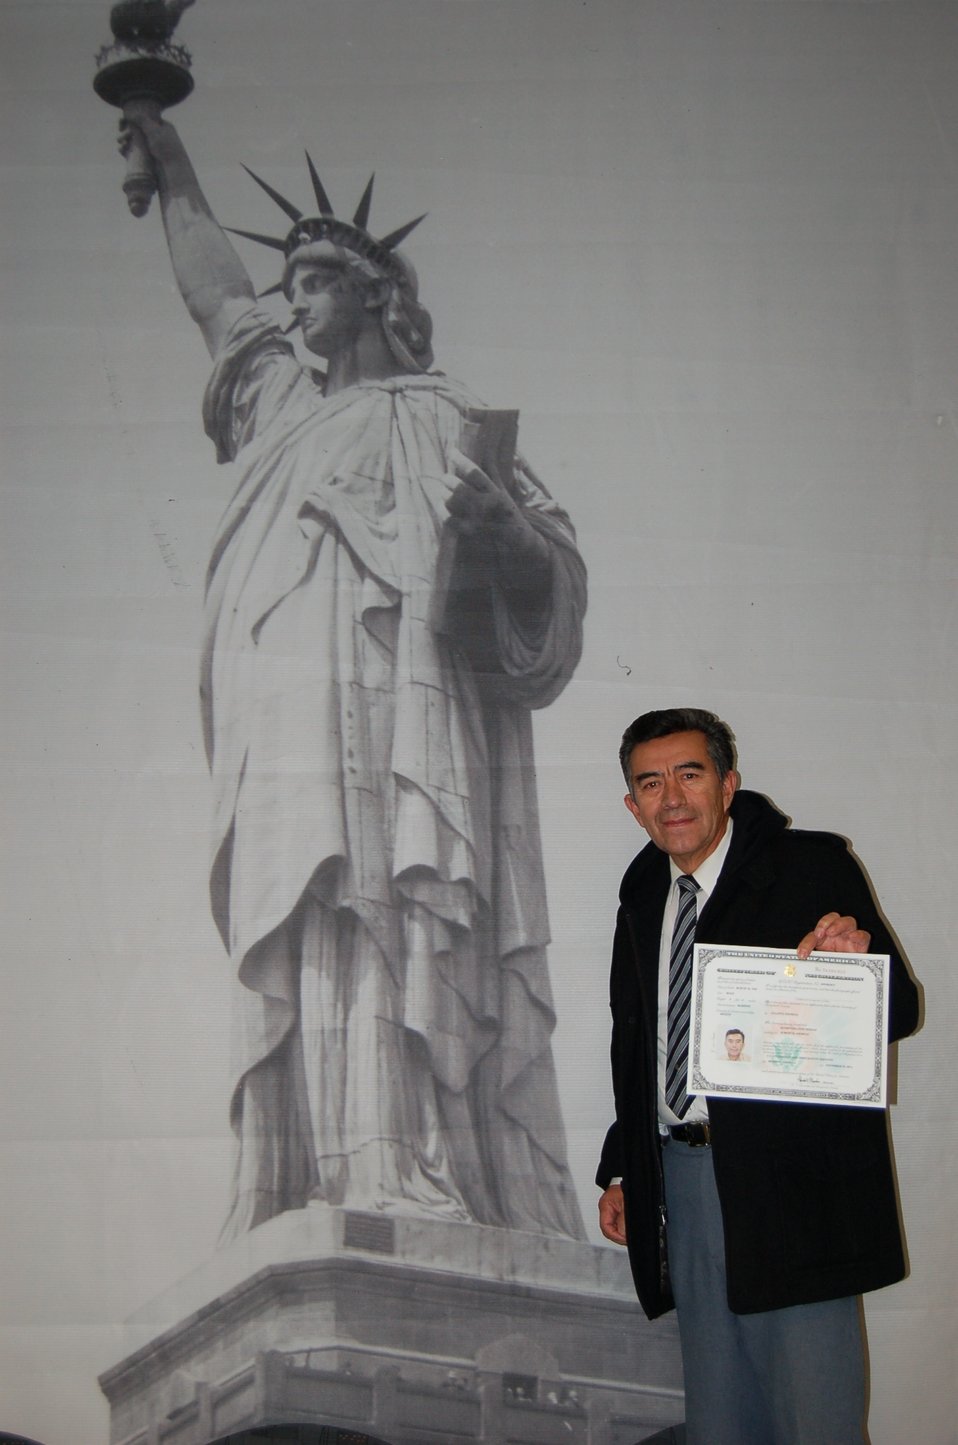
New Citizens